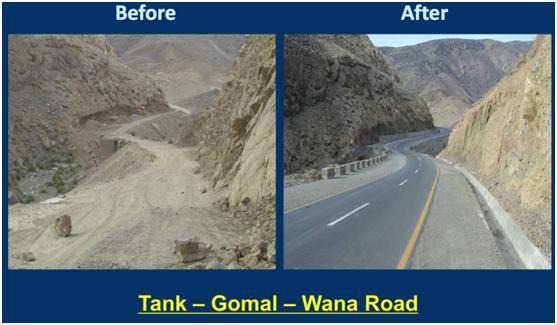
Tank- Gomal- Wana Road.

Before and After of Tank- Gomal- Wana Road.